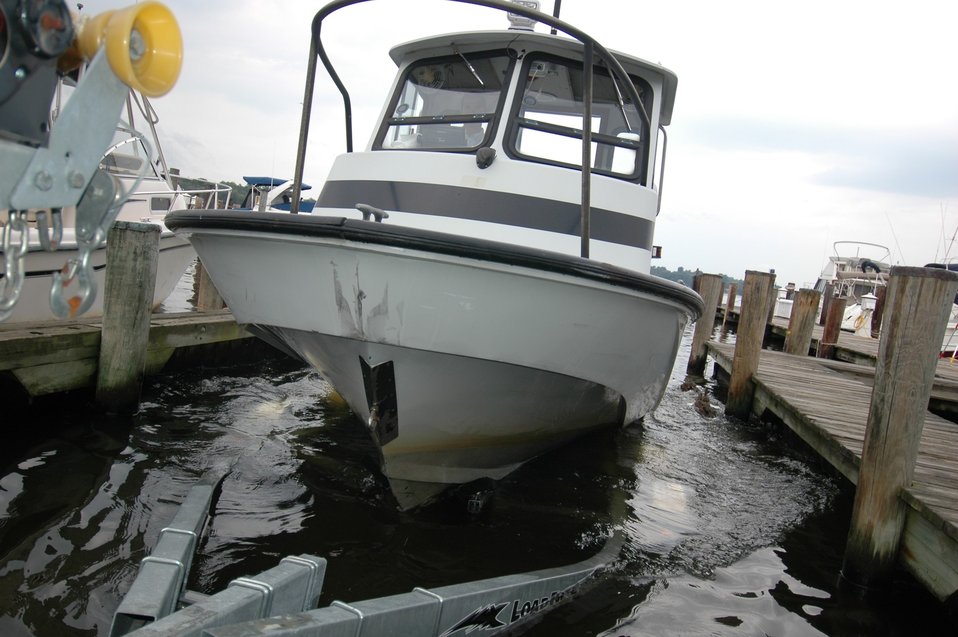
Hurricane Irene preparedness at Chesapeake Bay Field Office, Maryland.

Moving a field station boat to higher ground.